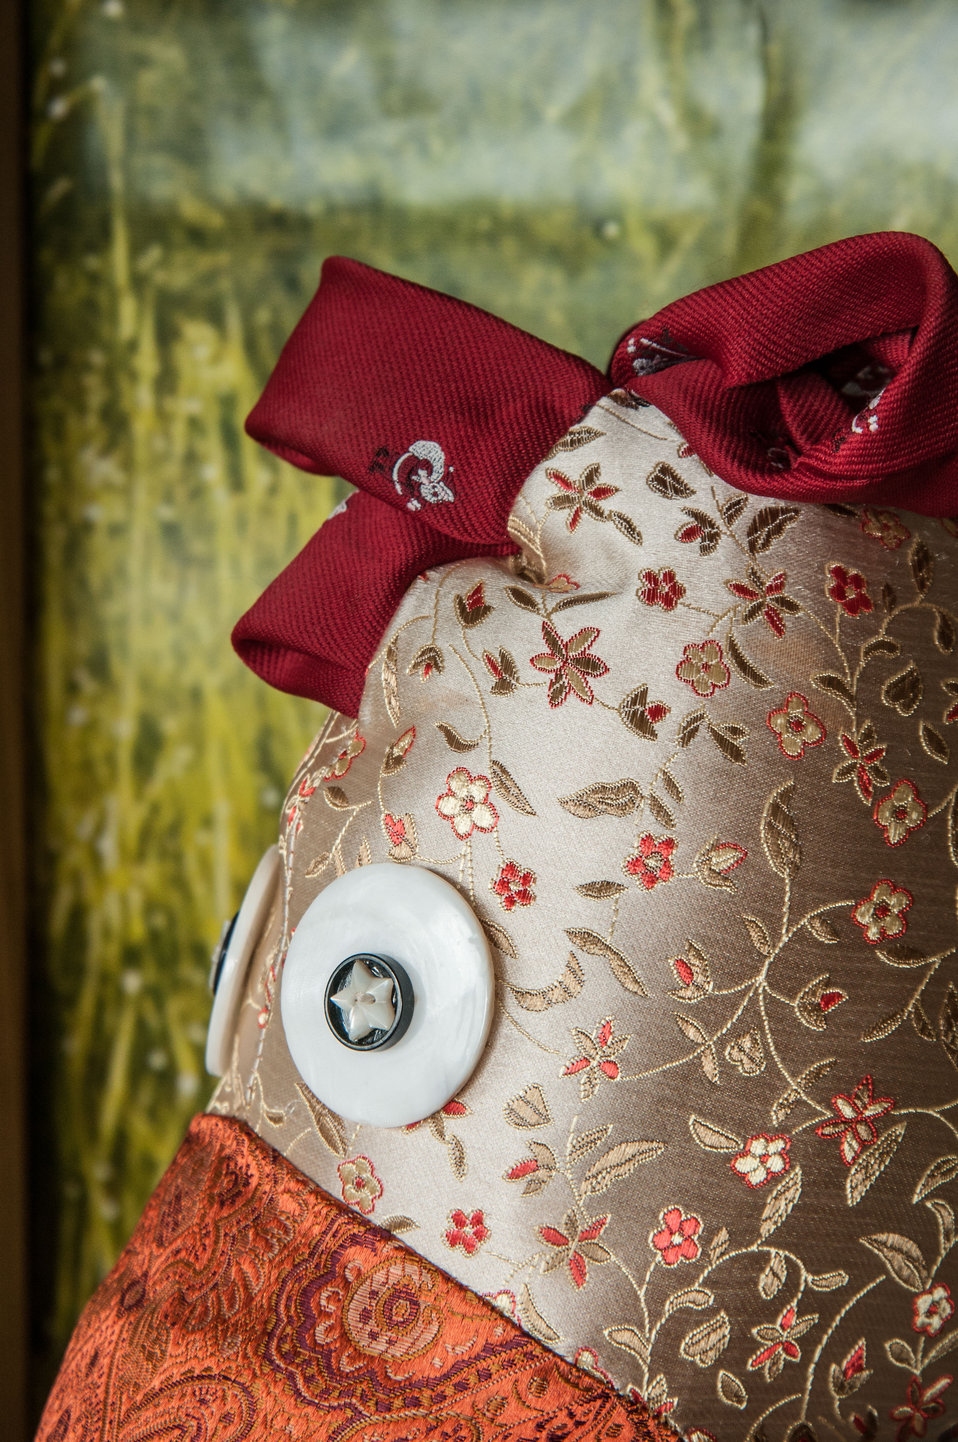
Online Viewer's Choice entries of the 2013 Art & Agriculture, Tuesday, July 9, 2013, in the South Building, Washington, D.C. Themes were expressed by employees from across the department and the contest was open to full-time and part-time USDA employees. Winning artwork will be displayed till the end of the year. U.S. Artistic expression is a creative outlet that is vital for an individual to grow and develop.